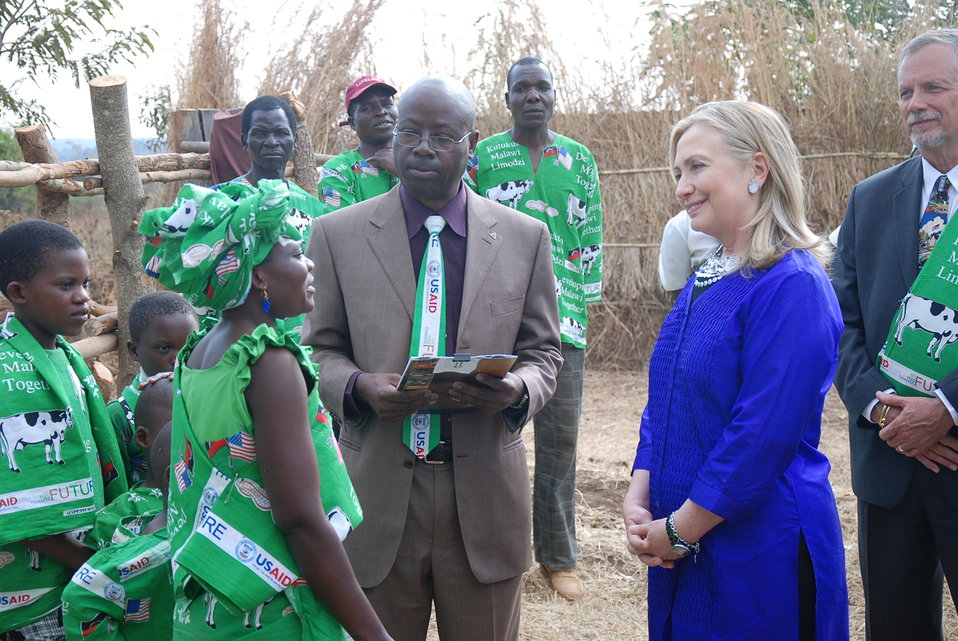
Secretary Clinton With the Lumbadzi Milk Bulking Group in Malawi

Dairy farmer Margaret Chinkwende explains her work to U.S. Secretary of State Hillary Rodham Clinton and Martin Banda of the U.S. Agency for International Development (USAID) in Lilongwe, Malawi, August 5, 2012.